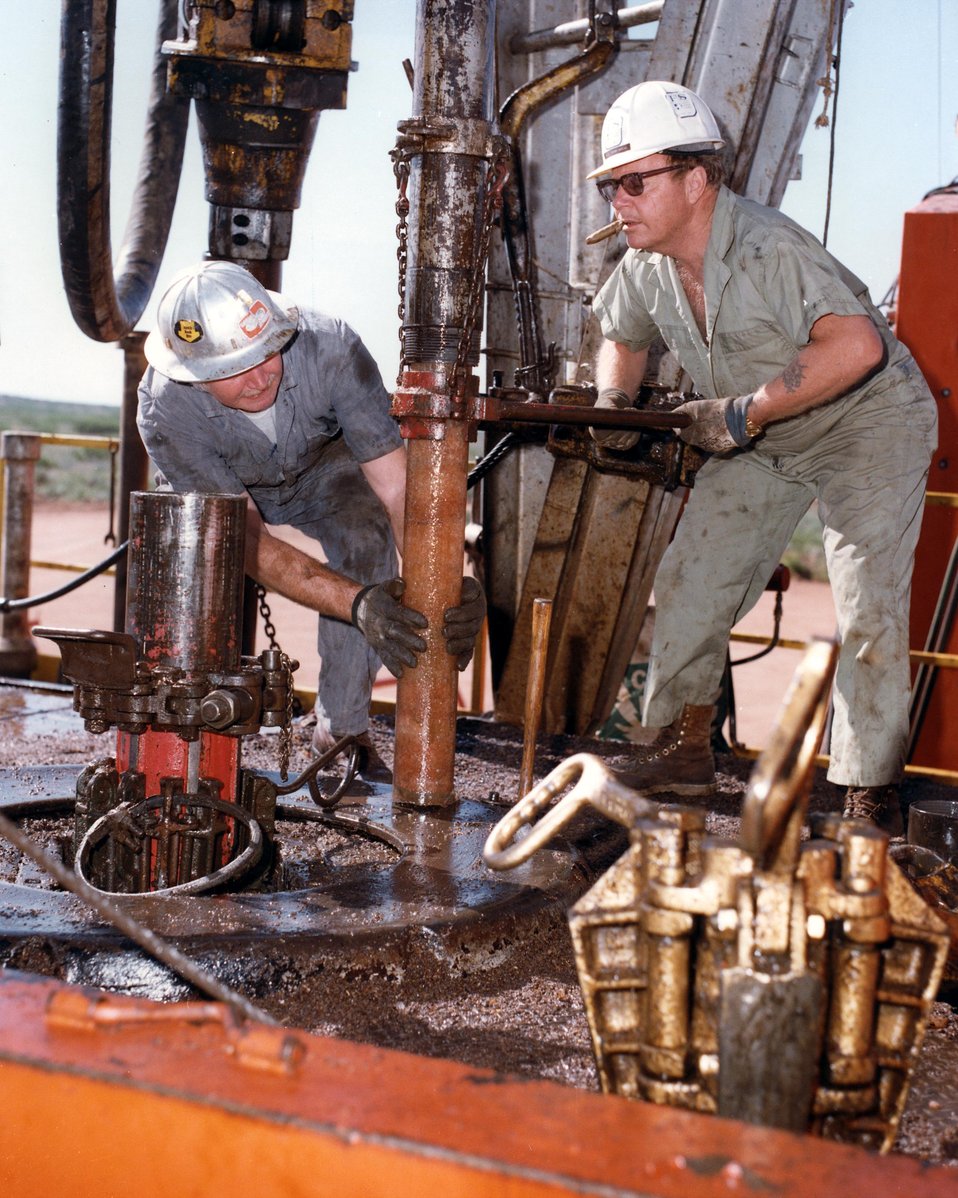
DRILLING TEAM MEMBERS RECOVER CORE DURING DRILLING OPERATIONS.

THE WASTE ISOLATION PILOT PLANT IS A DOE RESEARCH AND DEVELOPMENT FACILITY FOR DEMONSTRATING THE SAFE DISPOSAL OF TRANSURANIC RADIOACTIVE WASTES. TEST SHAFTS HAVE BEEN DRILLED TO A DEPTH OF 2,100 FEET. THE SHAFTS, ONE 6 FEET IN DIAMETER AND THE OTHER 12 FEET IN DIAMETER, PROVIDE AN ENTRY PASSAGE AND VENTILATION TO THE UNDERGROUND SALT ROCK FORMATION THAT IS BEING TESTED TO DETERMINE ITS SUITABILITY FOR RADIOACTIVE WASTE STORAGE.